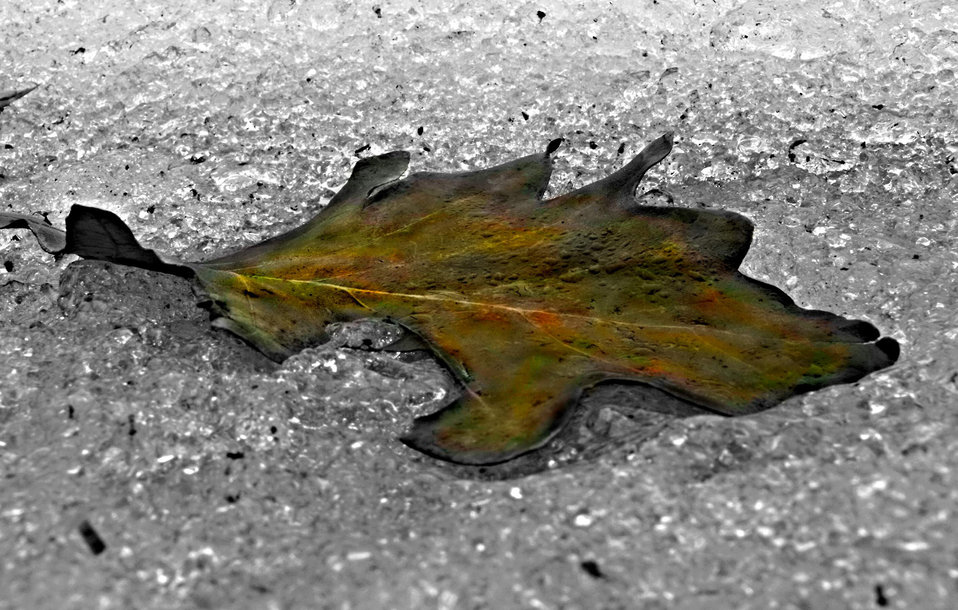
Leaf on ice

Dead leaf laying on a sheet of ice.